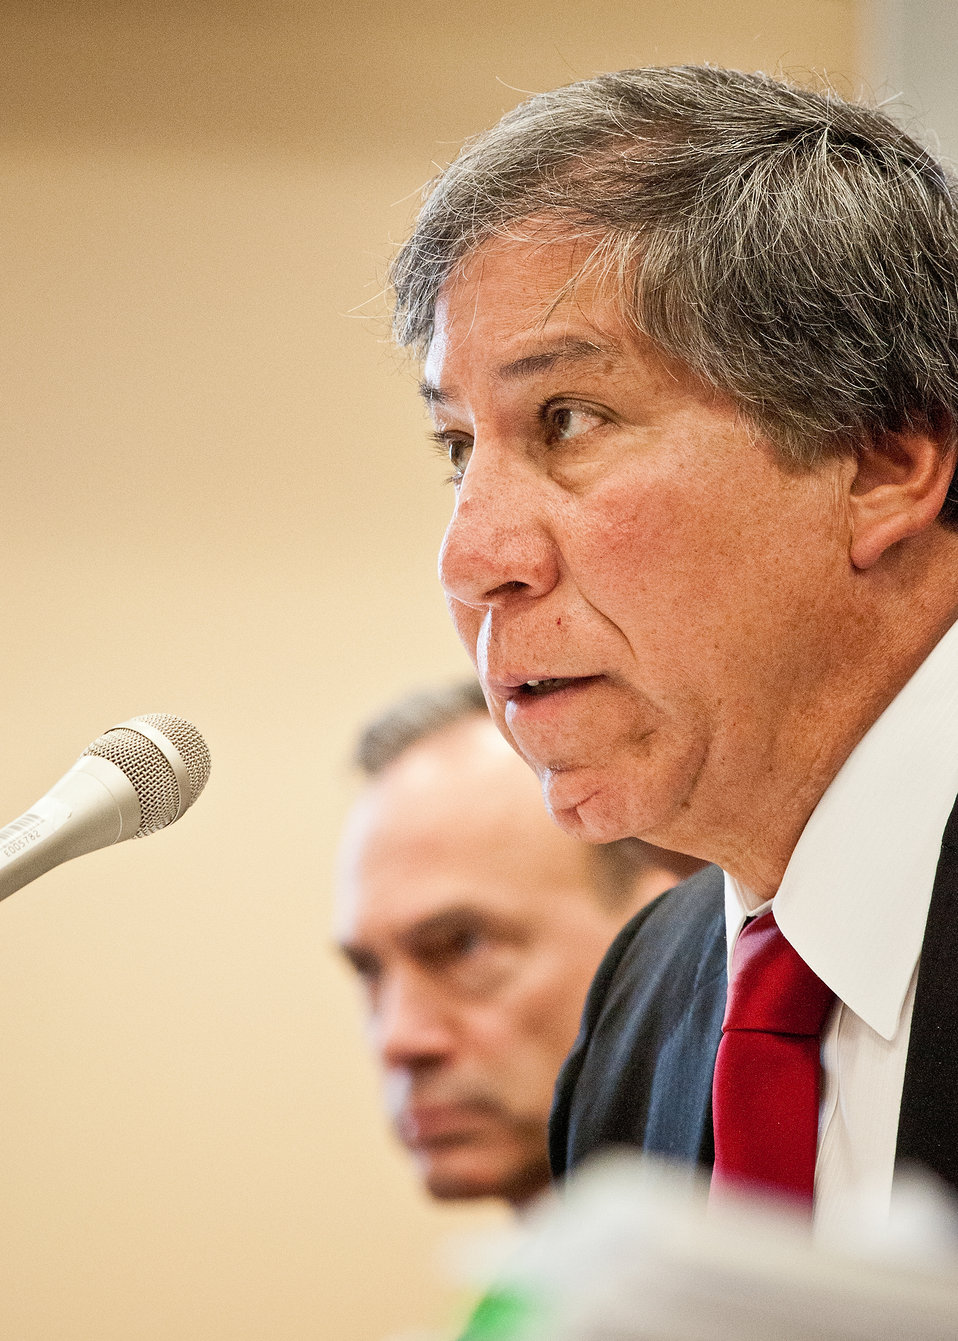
Ed Avalos, Under Secretary, Marketing and Regulatory Programs answers questions posed by members of the House Agriculture Appropriations Subcommittee while testifying on Capitol Hill with representatives of the Marketing and Regulatory Program agencies on their fiscal year 2013 budget requests in Washington, D.C., Tuesday, March 6, 2012.